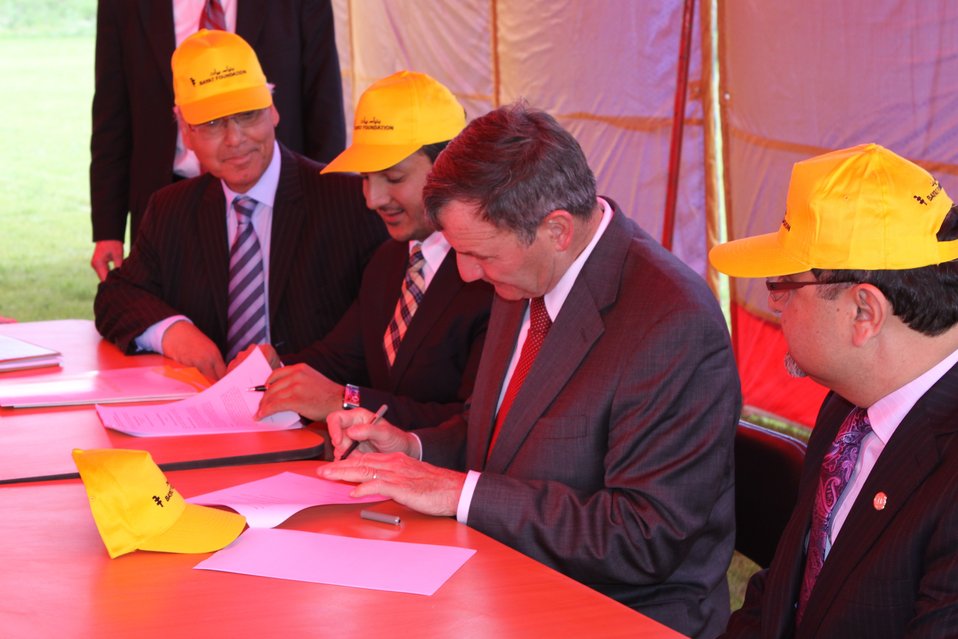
100526 AUAF Graduation 360